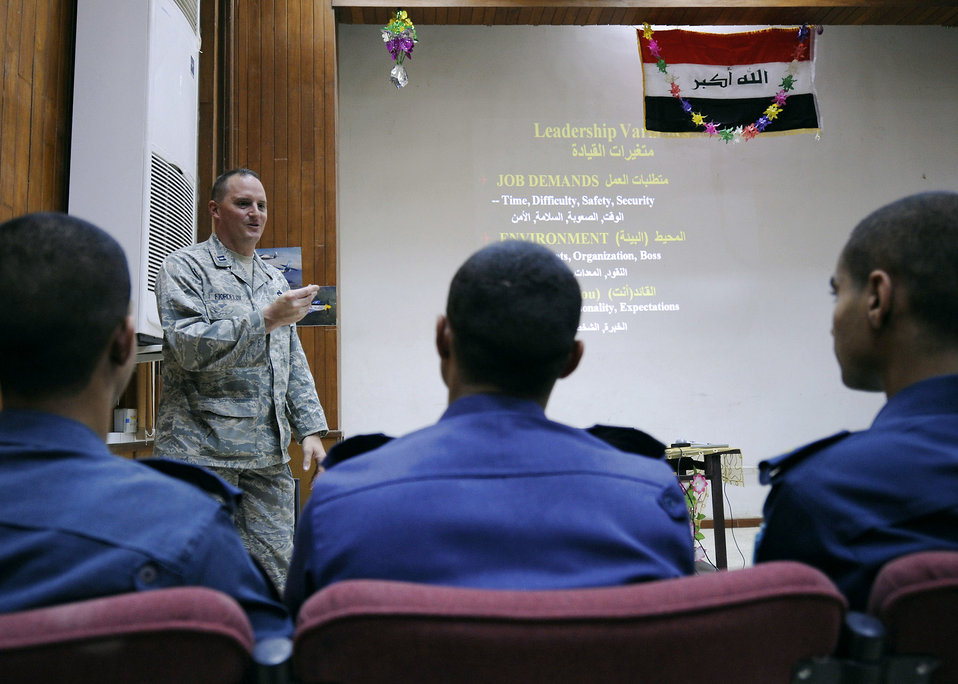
American Airman teaches Iraqi air force cadets

Capt. Tom Fiordelisi instructs situational leadership to Iraqi air force cadets at Forward Operating Base Rustamiyah, Iraq. Captain Fiordelisi, a native of Seymour, Conn., is the Air Force ROTC Det. 630 commadant of cadets at Kent State University, Ohio. Captain Fiordelisi is a 321st Air Expeditionary Training Group air adviser.